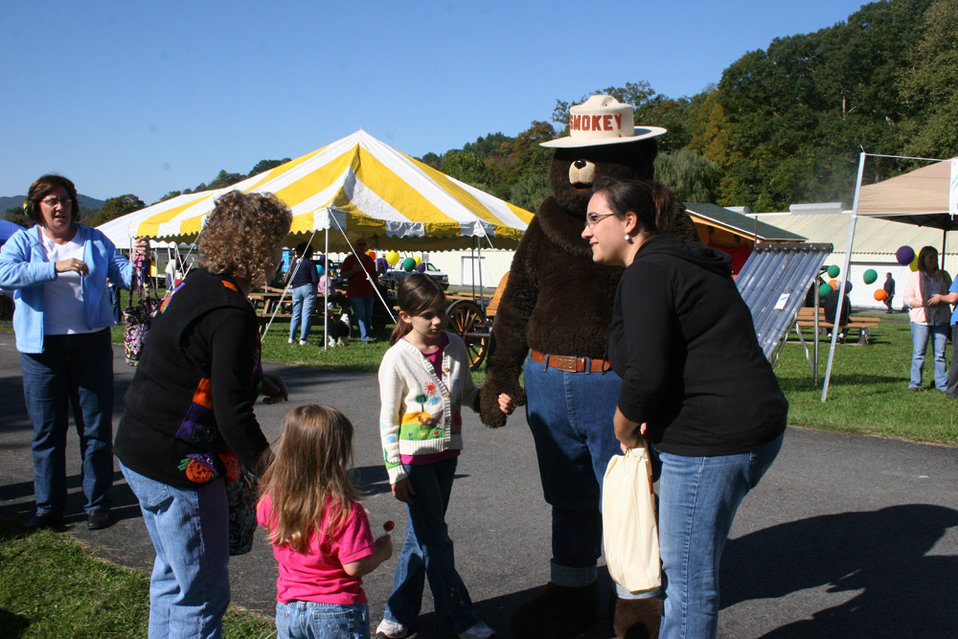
Freshwater Folk Festival

The 5th Annual Freshwater Folk Festival at White Sulphur Springs National Fish Hatchery in West Virginia.Credit: USFWS